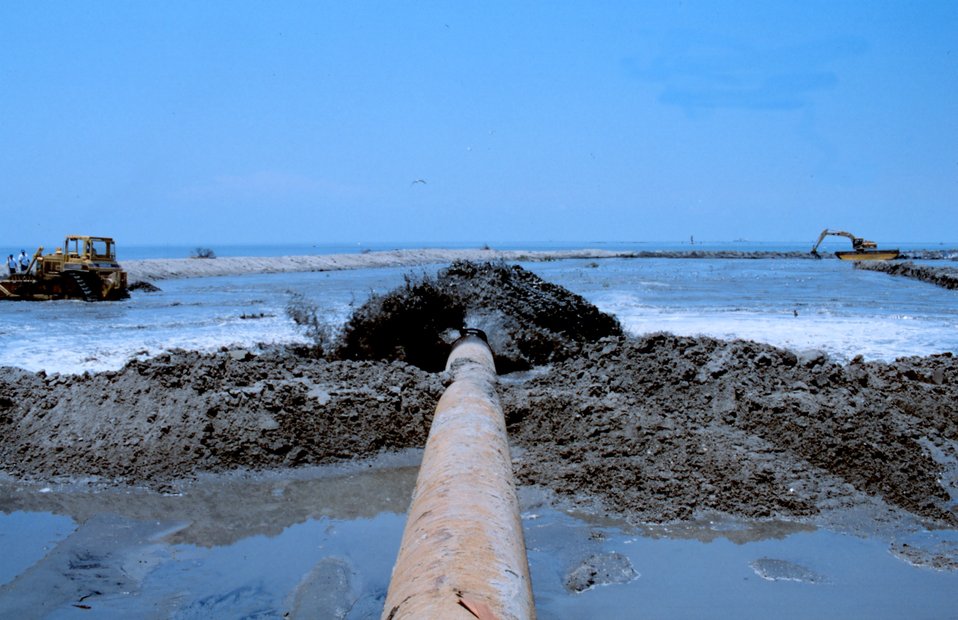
A bird's eye view of sediment being pumped onto the marsh platform. This image was used in the NOAA Restoration Center brochure that was published in May 2001.